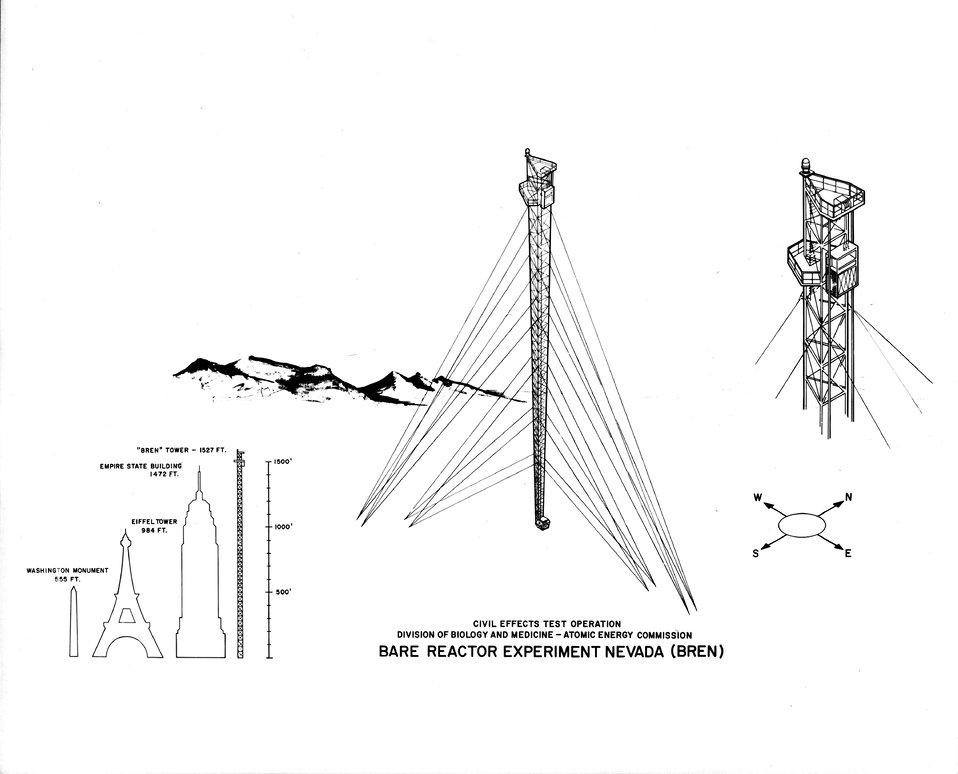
Project BREN (Bare Reactor Experiment, Nevada) is a continuation of earlier work. With the reactor serving as a radiation source, measurements will be made of the amount of shielding from nuclear radiation provided by light residential structures and other materials similar to those used in typical Japanese homes. c. 1962